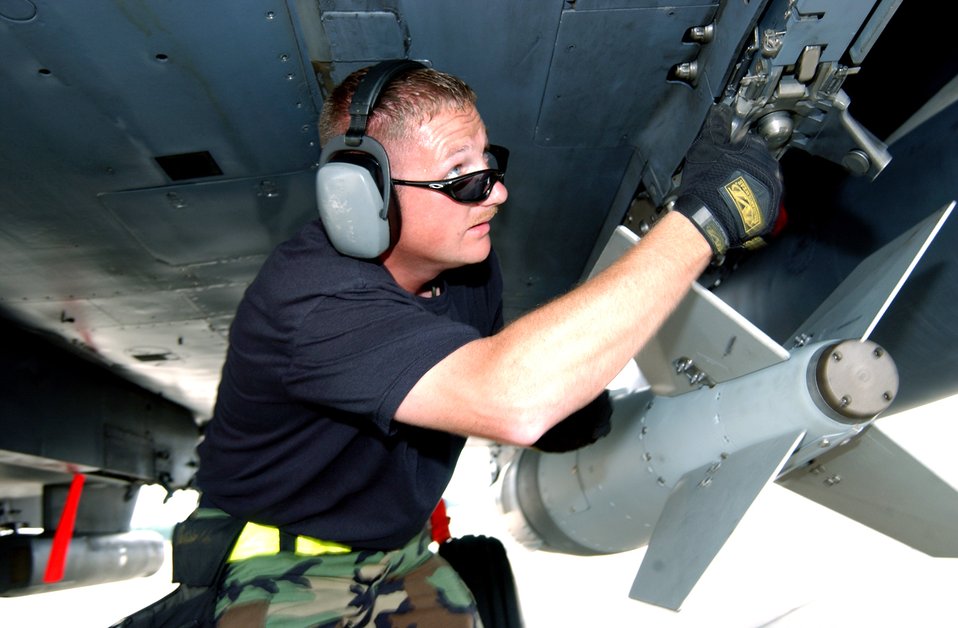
More strike in the Eagle

SEYMOUR JOHNSON AIR FORCE BASE, N.C. -- Staff Sgt. Bryon Russell ensures a joint direct attack munition is loaded on an F-15E Strike Eagle here June 10. Sergeant Russell is a weapons load crew chief with the 336th Aircraft Maintenance Unit.